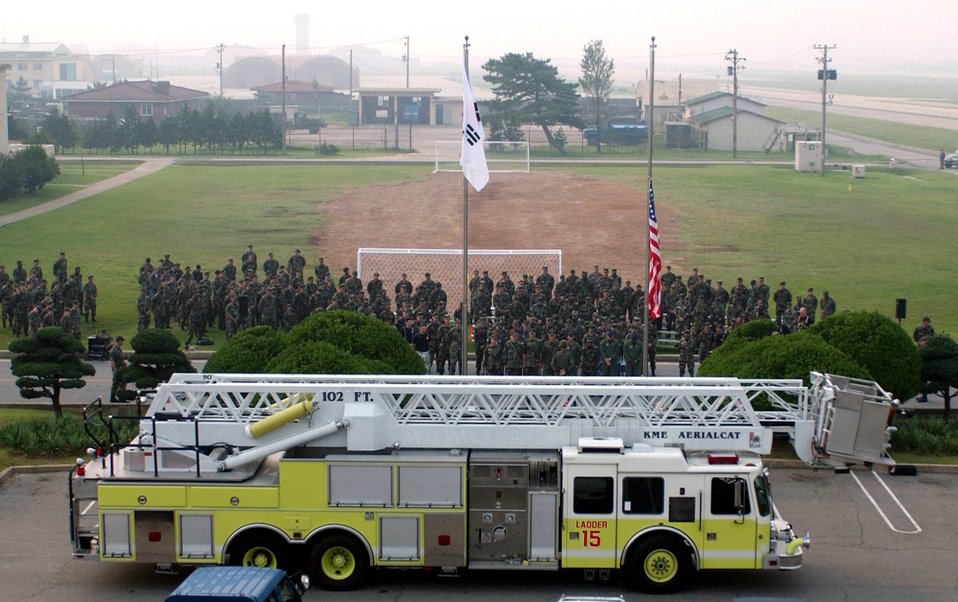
Kunsan Airmen remember Sept. 11

Airmen from the 8th Fighter Wing pause for a moment of silence during the Sept. 11, 2001, remembrance ceremony Sept. 11 at Kunsan Air Base, South Korea. The ceremony marked the sixth anniversary of the terrorist attacks in New York City, the Pentagon and Shanksville, Pa.